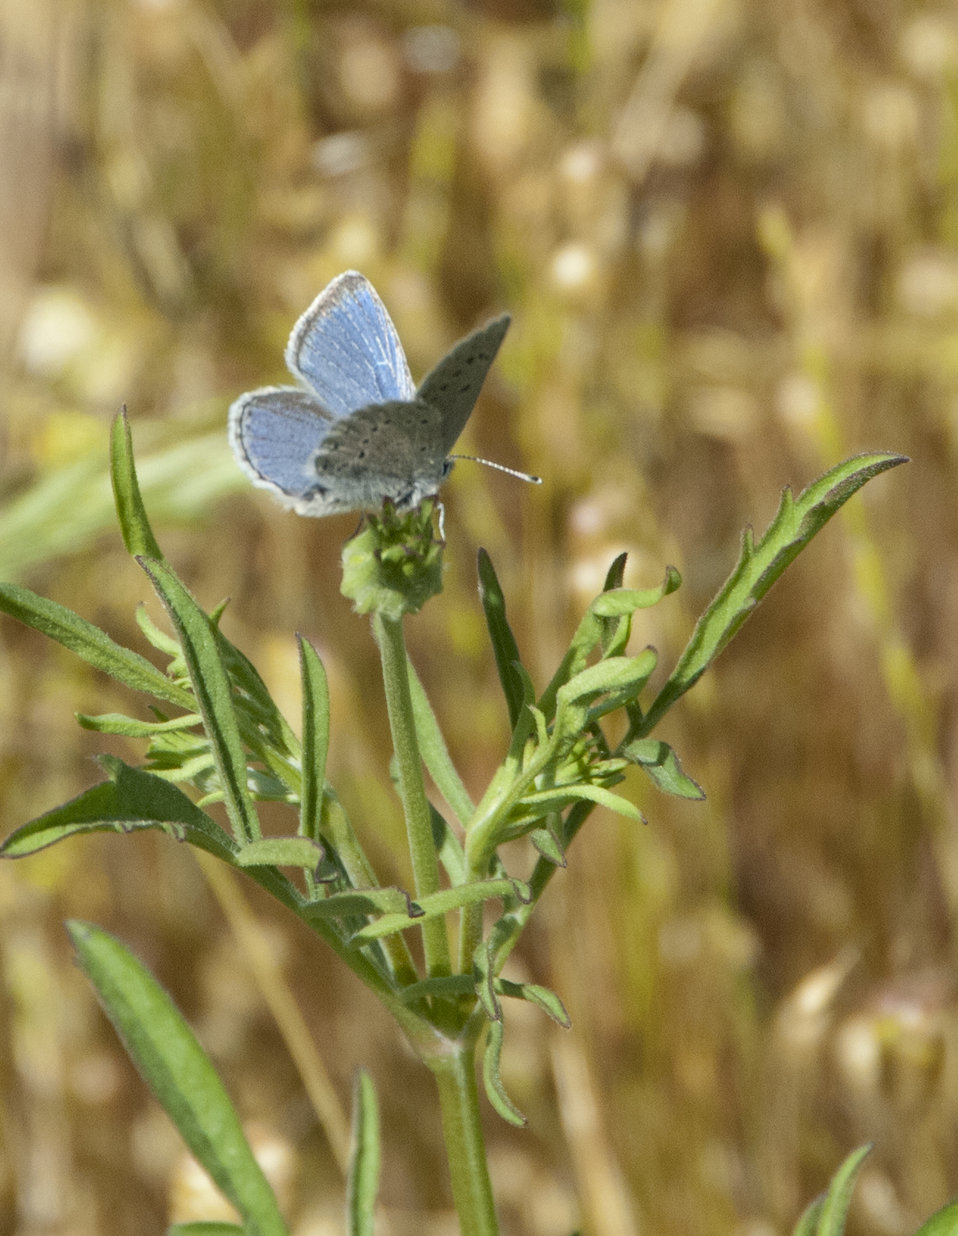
Mission Blue Butterfly-male

The endangered Mission blue butterfly (Icaricia icarioides missionensis) is a small, delicate butterfly with a wingspan of about 1 to 1.5 inches. Sarah Swenty/USFWS